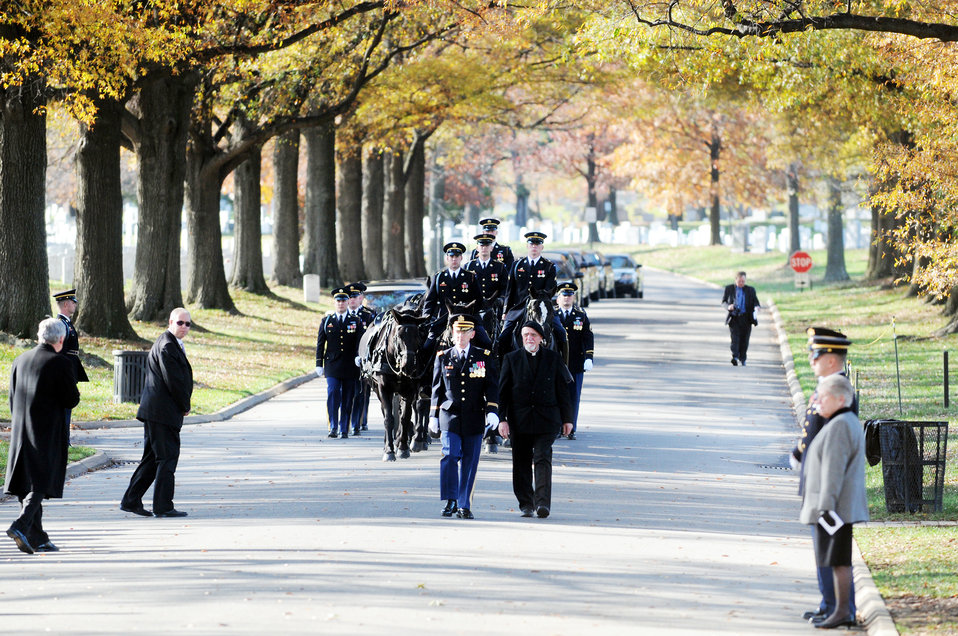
Funeral highlights search for missing servicemembers

Members of the Army Ceremonial Honor Guard carry the casket of one of the members of the World War II B-25 crew that was lost Dec. 5, 1942, near Papua, New Guinea, during an interment ceremony at Arlington National Cemetery in Virginia.